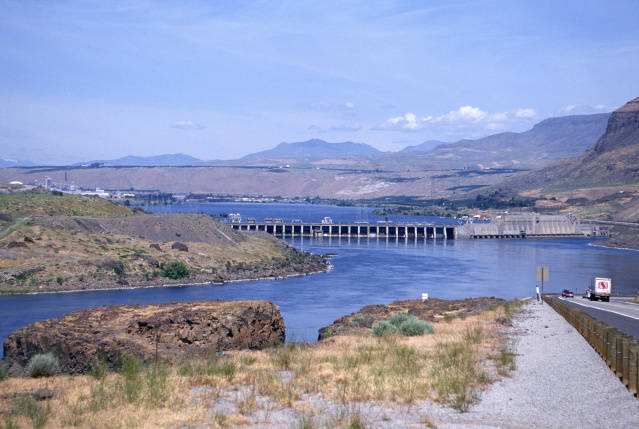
Dam on river